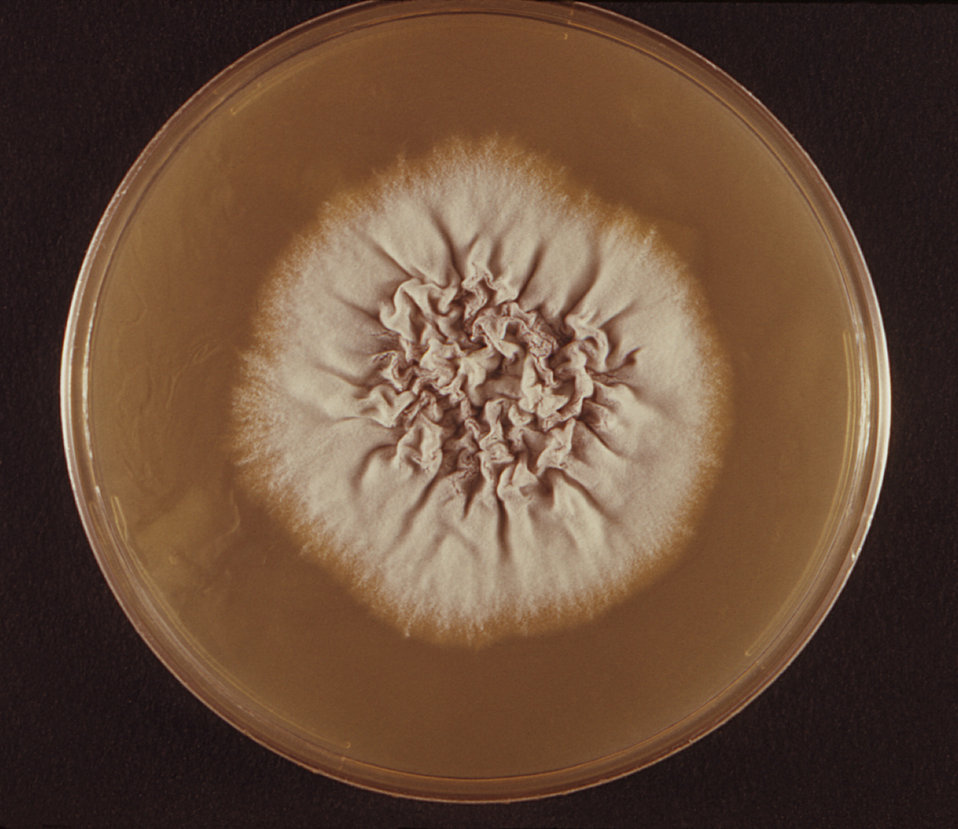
This photograph depicts the frontal view of a Petri dish within which fungal colonies of Trichophyton rubrum var. granulare had been cultured. Revealed is the colonial morphology, which in the case of T. rubrum is said to be waxy, glaborous, i.e., flat to cottony, and display from a frontal perspective, a white to bright yellowish-beige, and even a red-violet coloration. From the reverse (see PHIL 10541) or from the back, the colonies display a coloration that is a light yellowish to brown, or a reddish brown.